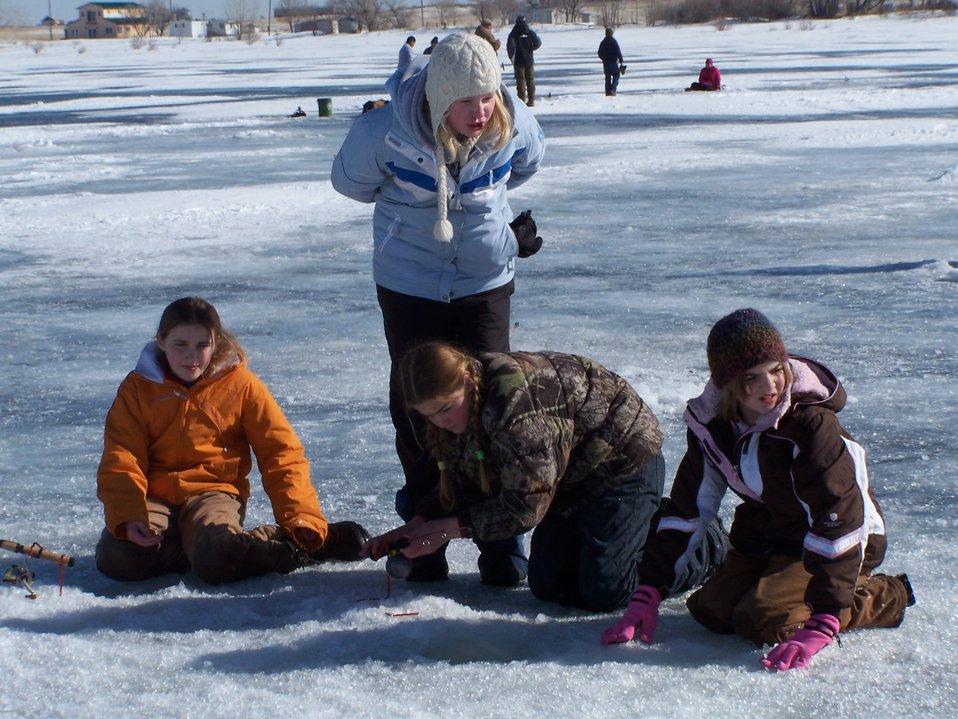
Ice Fishing at Bowdoin WMD